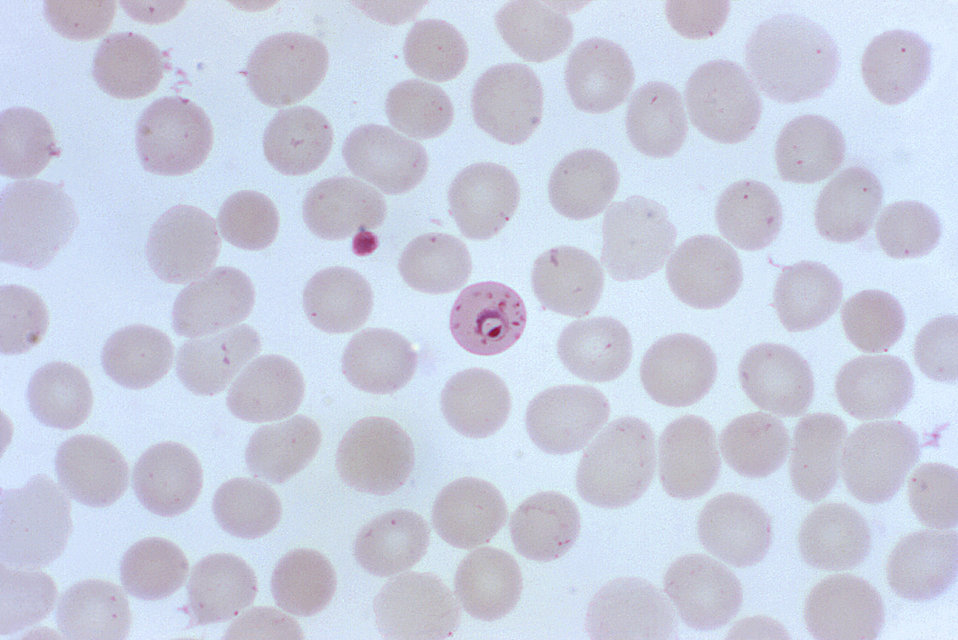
This photomicrograph shows a Plasmodium falciparum parasite in the ring stage, and containing Maurer's dots.